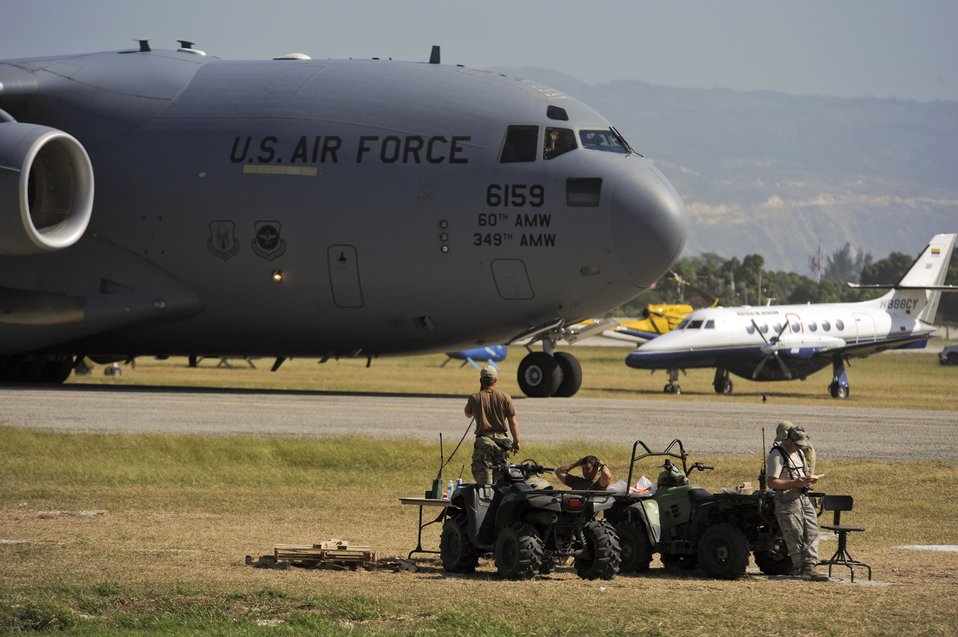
Combat controllers at work

Combat controllers guide a cargo aircraft from Travis Air Force Base, Calif., into Toussaint L'Ouverture International Airport in Port-au-Prince, Haiti, Jan. 23, 2010. The Airmen are from the 23rd Special Tactics Squadron at Hurlburt Field, Fla. In the initial days of Operation Unified Response air operations were similar to the Berlin Airlift with aircraft landing every five minutes. Now, aircraft from all over the world are still flying in and out to drop off humanitarian aid and transport people out of the Haiti after the devasting earthquake that hit the nation Jan. 12.